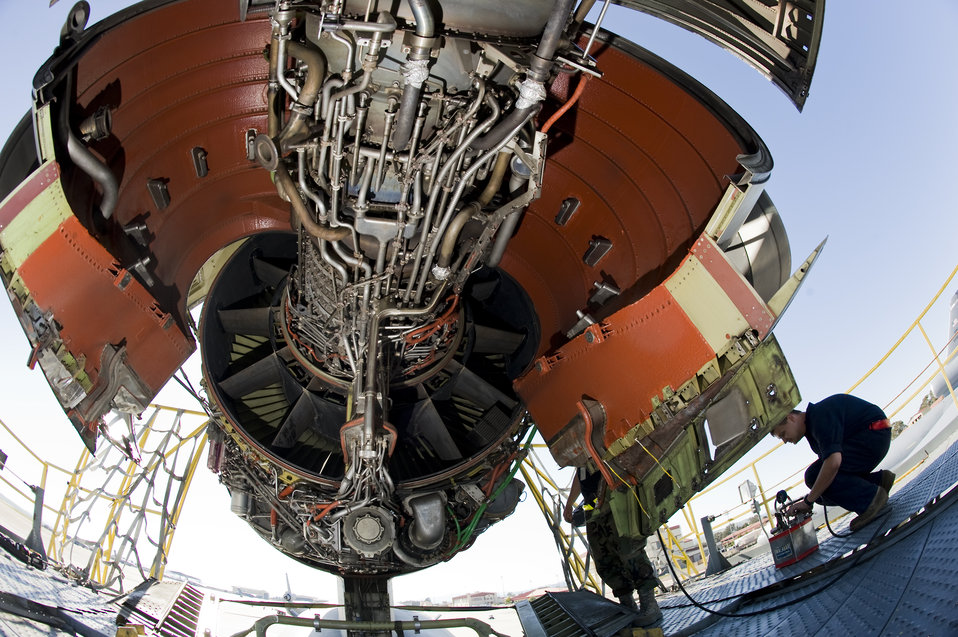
Travis Tanker Tasks

Tech. Sgt. Christopher Thompson, 660th Aircraft Maintenance Squadron hydraulically opens the engine cowlings of the #2 engine of a KC-10 Extender. Once open he will change a directional control solenoid valve for a thrust reverser of a KC-10 Extender #2 engine, 40 feet above the ground at Travis Air Force Base, Calif. on April 18, 2009.